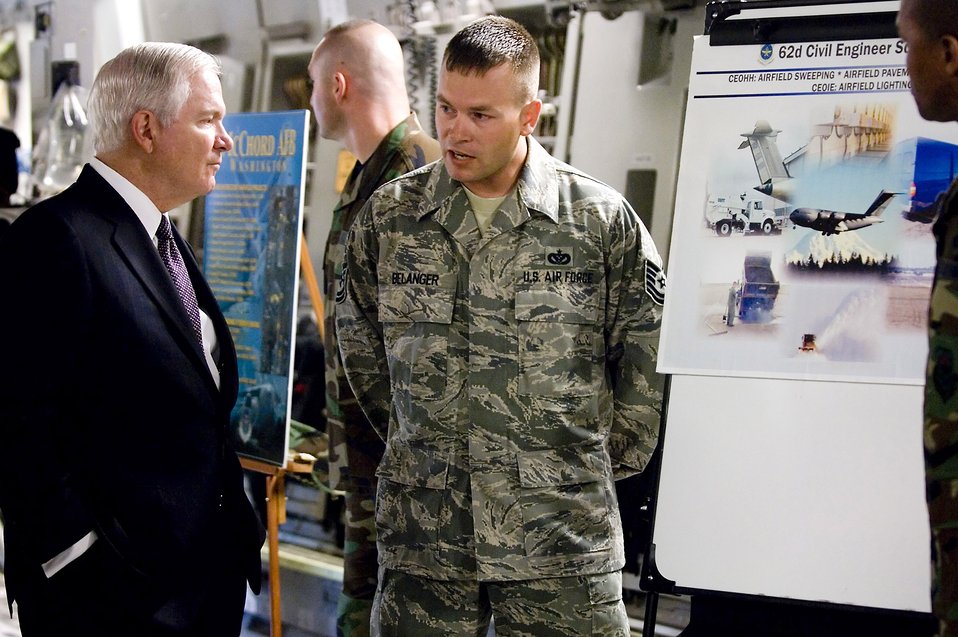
Secretary of Defense Robert M. Gates visit to McChord

Tech. Sgt. David Belanger conducts an airfield maintenance brief for Secretary of Defense Robert M. Gates during a static display tour inside a C-17 Globemaster III here July 7. Sergeant Belanger is assigned to the 62nd Civil Engineer Squadron.